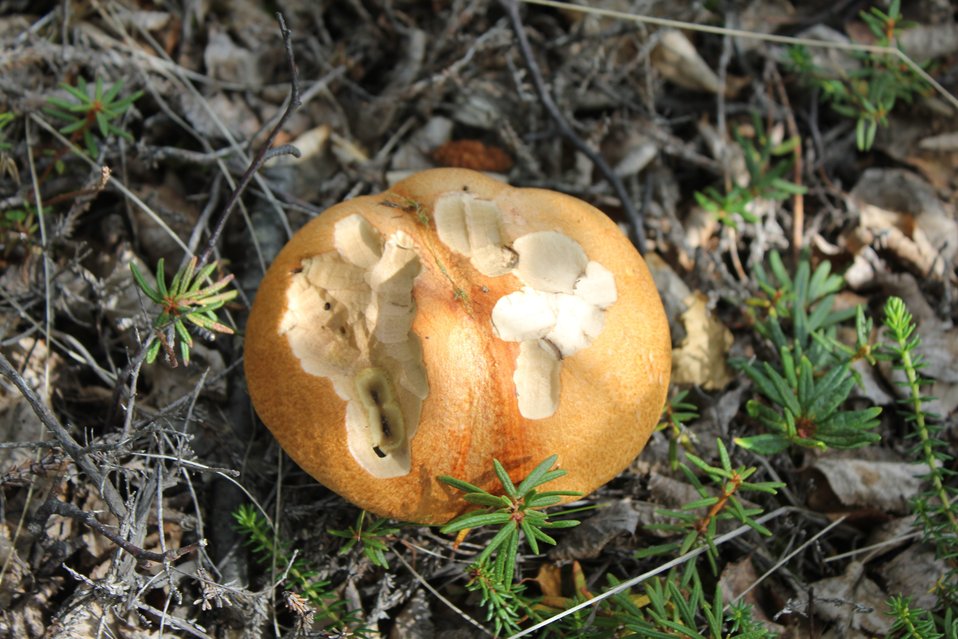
Rhodent nibbled mushroom. Note incisor lineations.